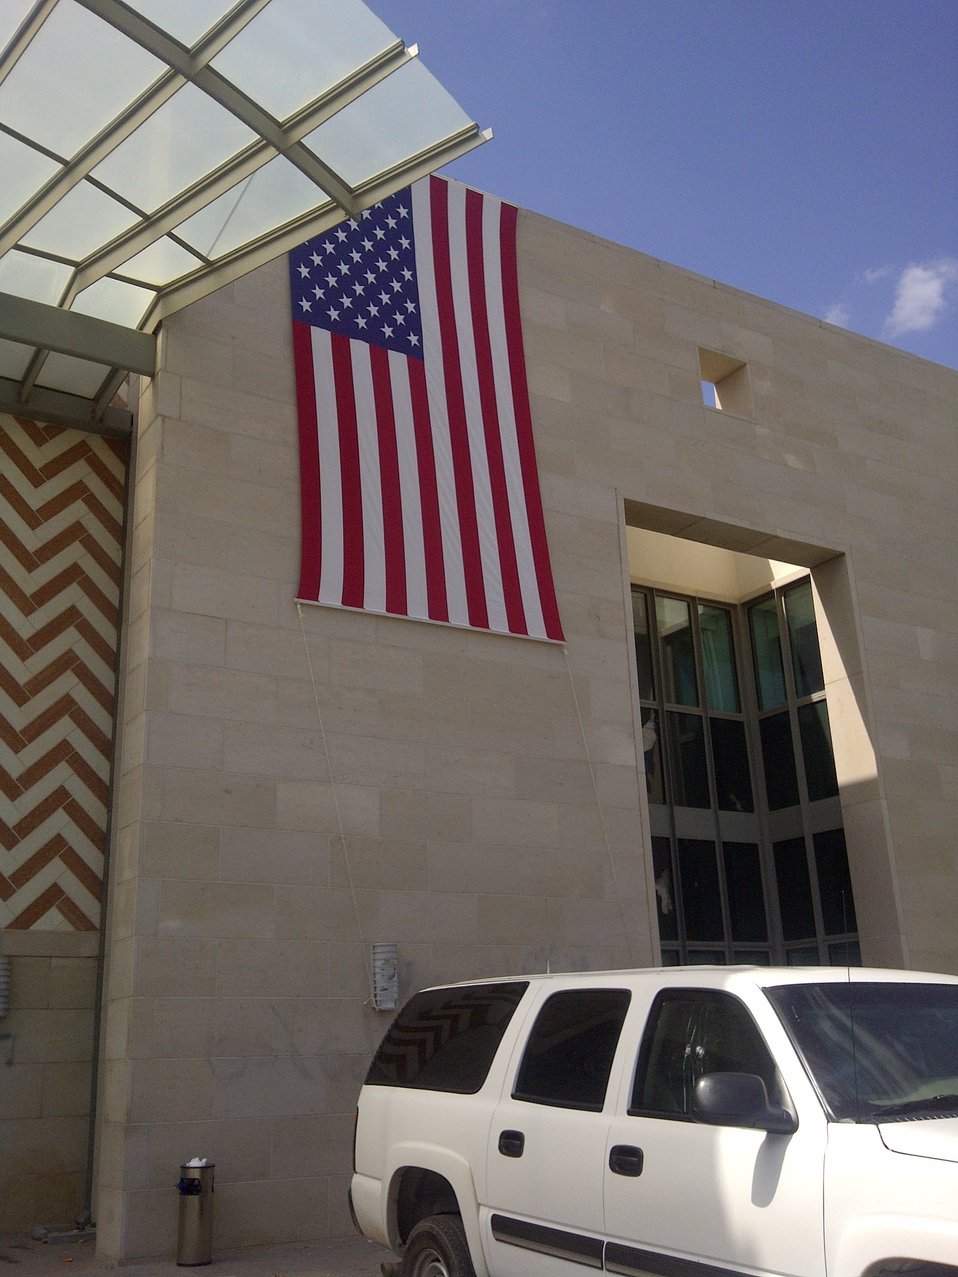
The U.S. flag flying over U.S. Embassy Tunis in Tunis, Tunisia on September 15, 2012.